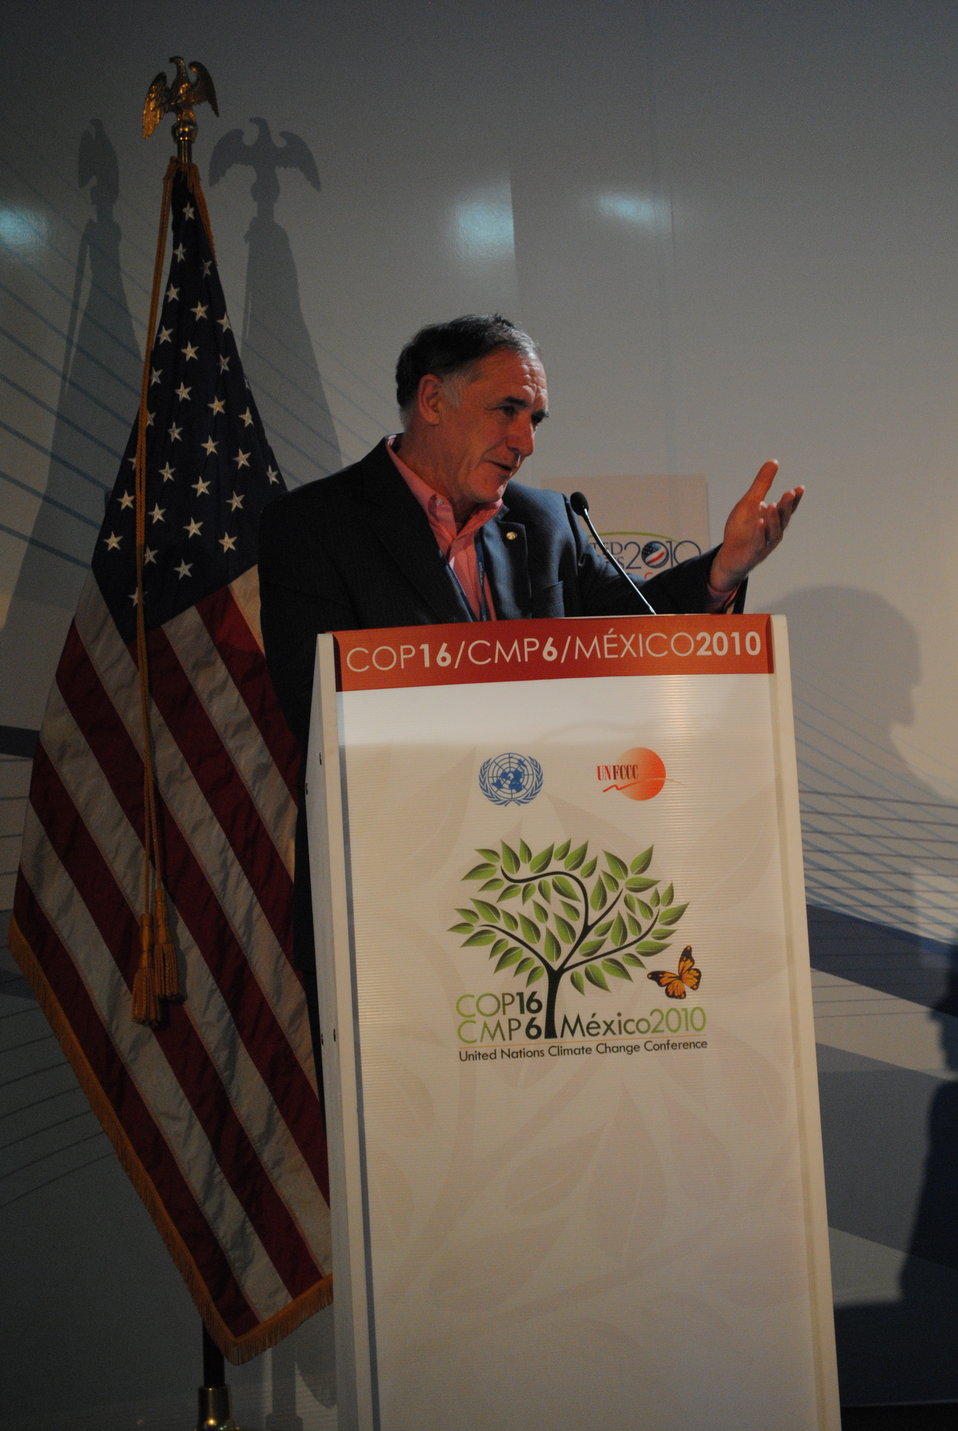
Keith Curtis Addresses the U.S. Center

Keith Curtis of the U.S. Department of Commerce addresses the U.S. Center at COP-16 in Cancun, Mexico, on December 7, 2010.